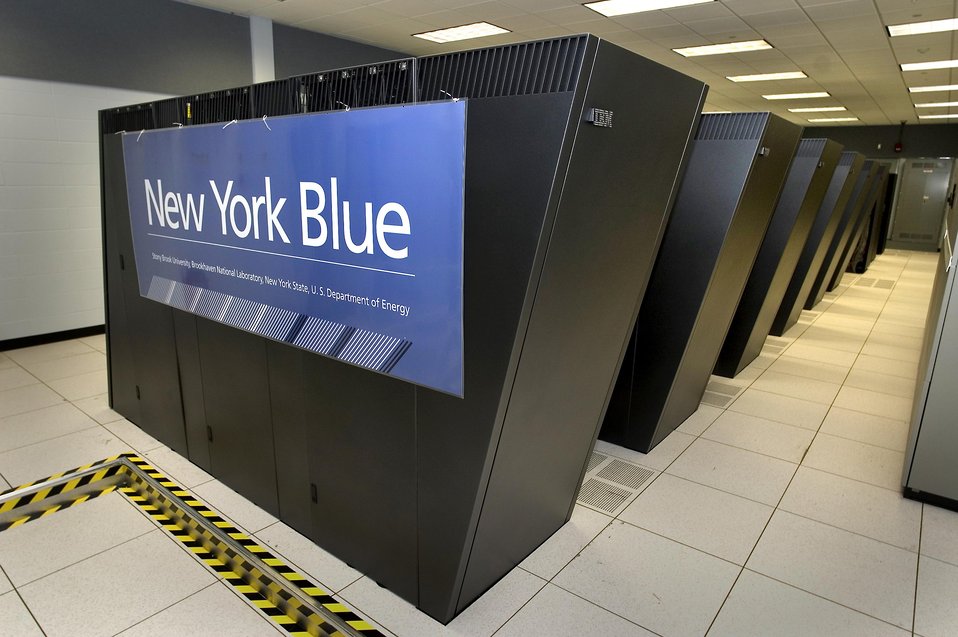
The IBM Blue Gene Supercomputer was named New York Blue and is located at Brookhaven National Laboratory.
New York Blue is the centerpiece of the New York Center for Computational Sciences (NYCCS). It is a cooperative effort between Stony Brook University and BNL. New York Blue has an 18-rack configuration, at total of 36,864 processors and 18.4 TB of memory. It is the world's fastest supercomputer for general users and is expected to rank among the top ten fastest computers in the world.